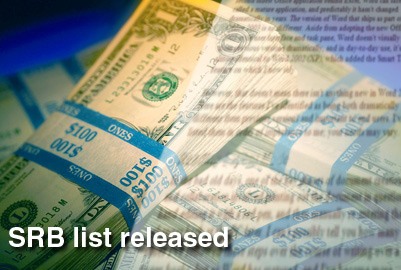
Officials release new selective re-enlistment bonus list

Pentagon officials release latest re-enlistment bonus list containing 91 Air Force specialties emphasized on retaining Airmen with 17 months to six years of service.